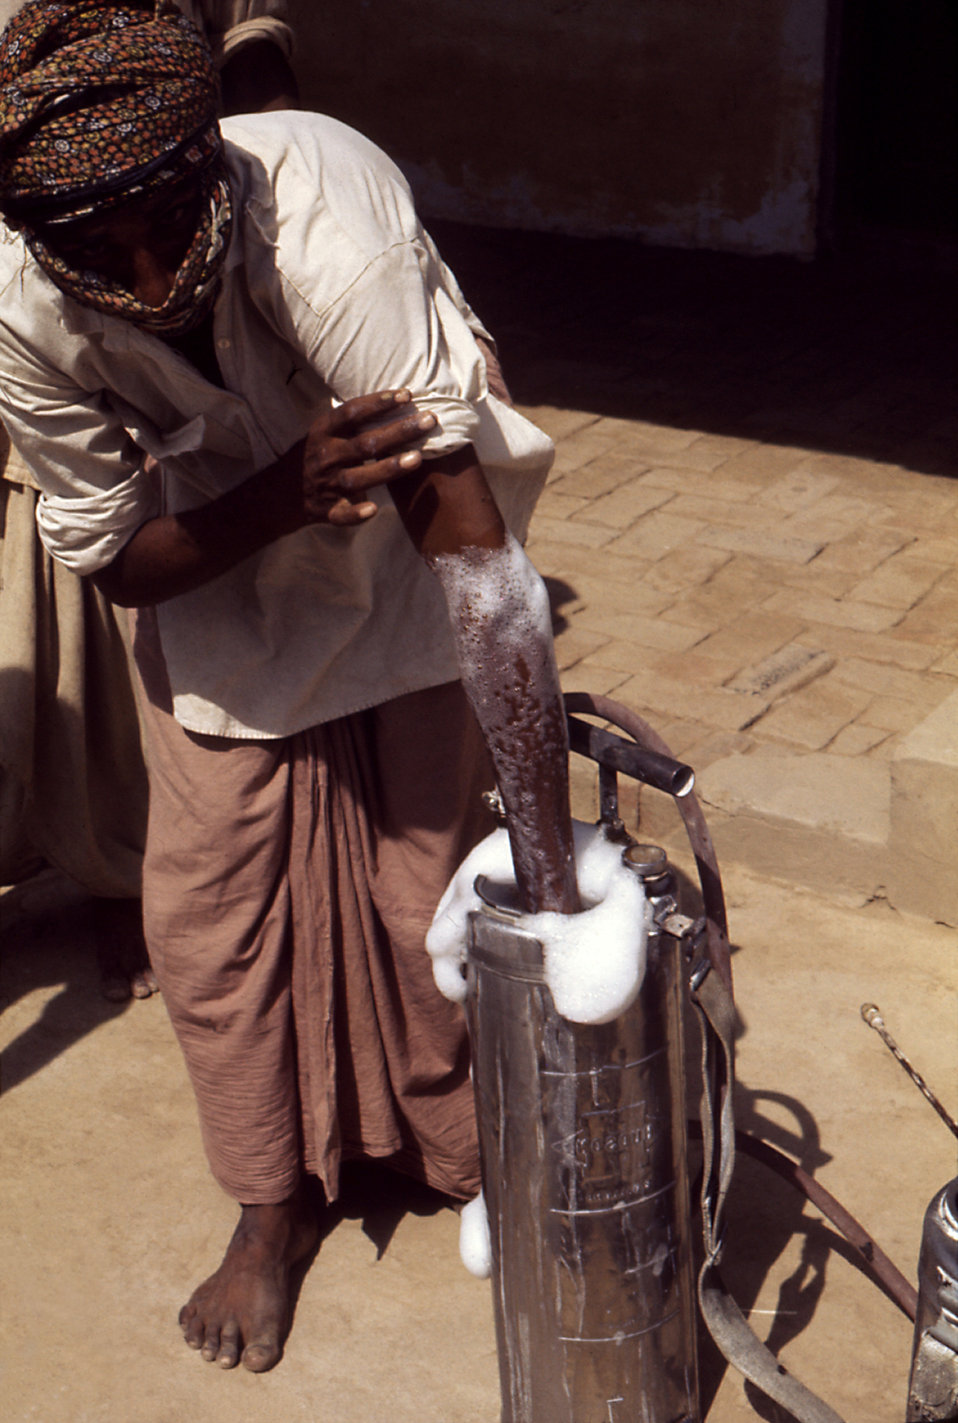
This Pakistani malaria control worker is mixing a malathion spray suspension using his uncovered hand and arm.